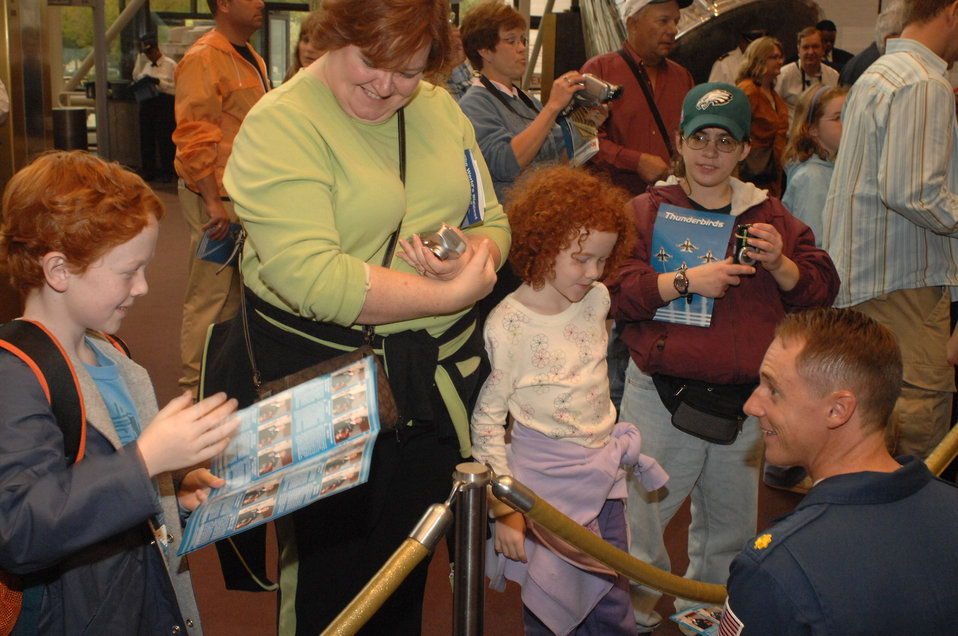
Thunderbirds visit Smithsonian Air and Space Museum

Maj. Scottie Zamzow sign autographs was at the Smithsonian Air and Space Museum Oct. 11 in Washington, D.C. Major Zamzow is a pilot on the Air Force Thunderbirds demonstration team and was at the Smithsonian as part of a week-long series of events that will culminate with the opening of the Air Force Memorial Oct. 14.